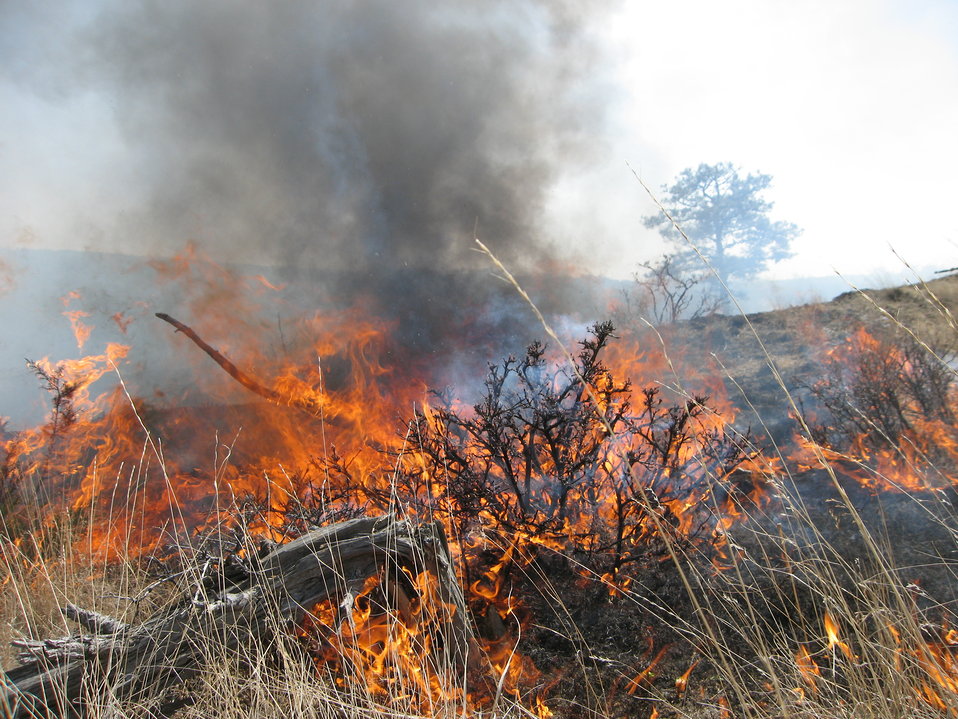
Fire as a Tool

Charles M. Russell National Wildlife Refuge uses prescribed fire in two ways: habitat restoration and maintenance, and hazardous fuels reduction.